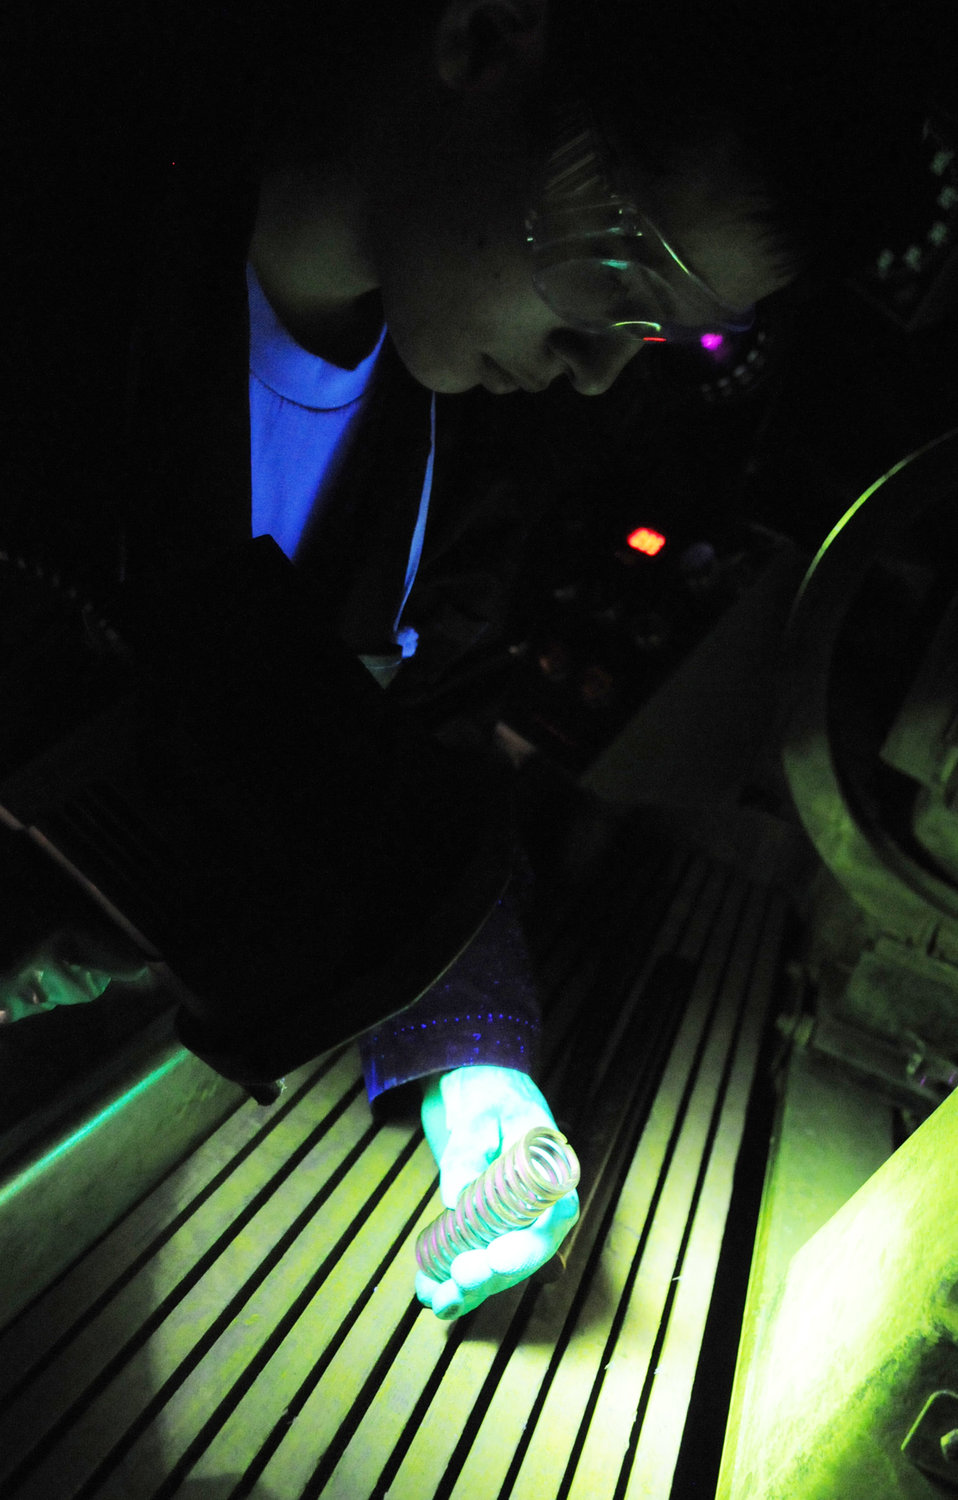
Black light inspection

Airman 1st Class Christopher Bovill inspects a spring after it was run through a magnetic particle machine at the Non-Destructive Inspection shop March 9, 2010, at RAF Mildenhall, England. Airman Bovil is a NDI technician with the 100th Maintenance Group.